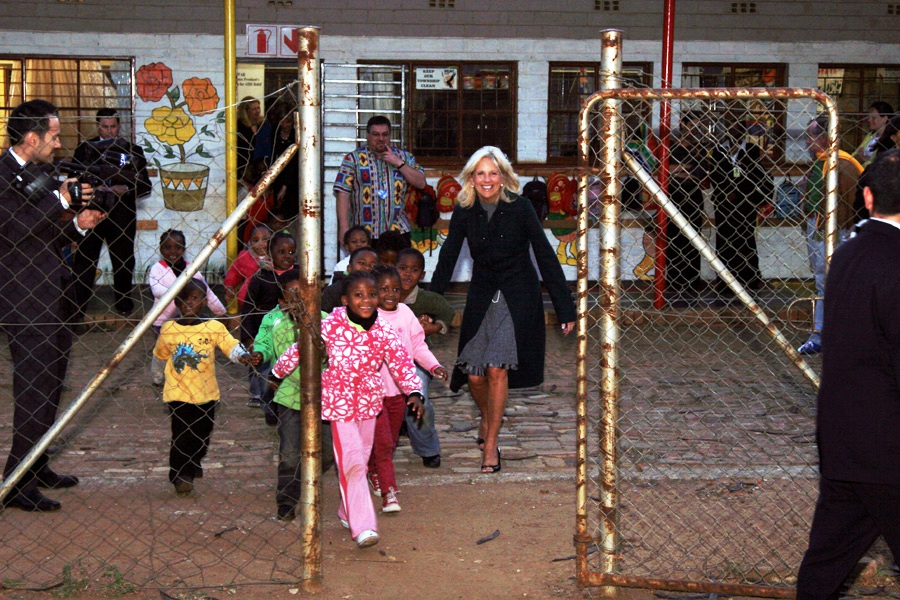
Dr. Jill Biden Plays With South African Children

Dr. Jill Biden, wife of Vice President Joseph Biden, plays with South African children during her visit to Mapetla Day Care Centre in Soweto, Johannesburg, South Africa, on June 10, 2010.